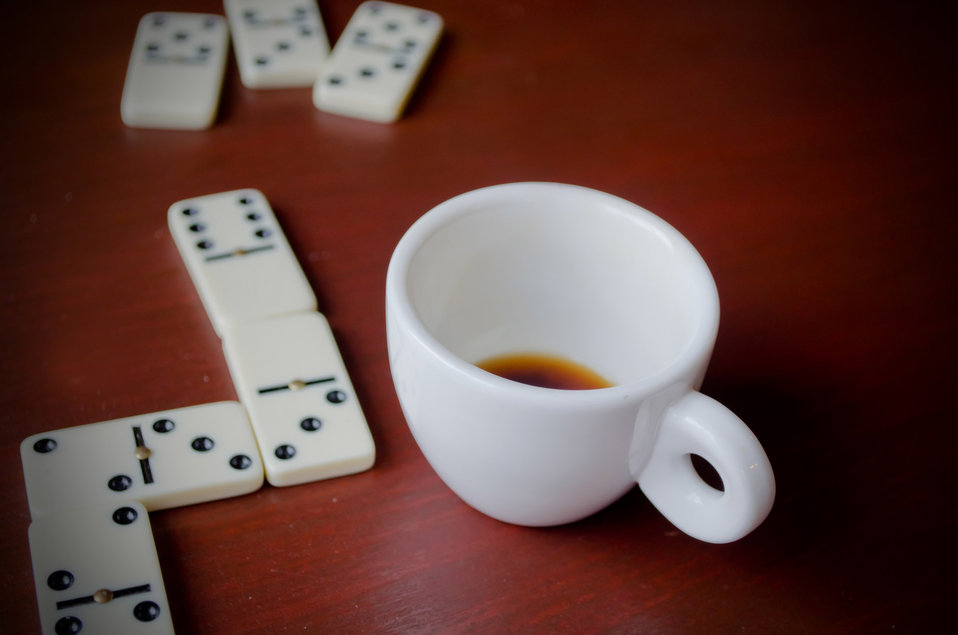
Domino and coffee.